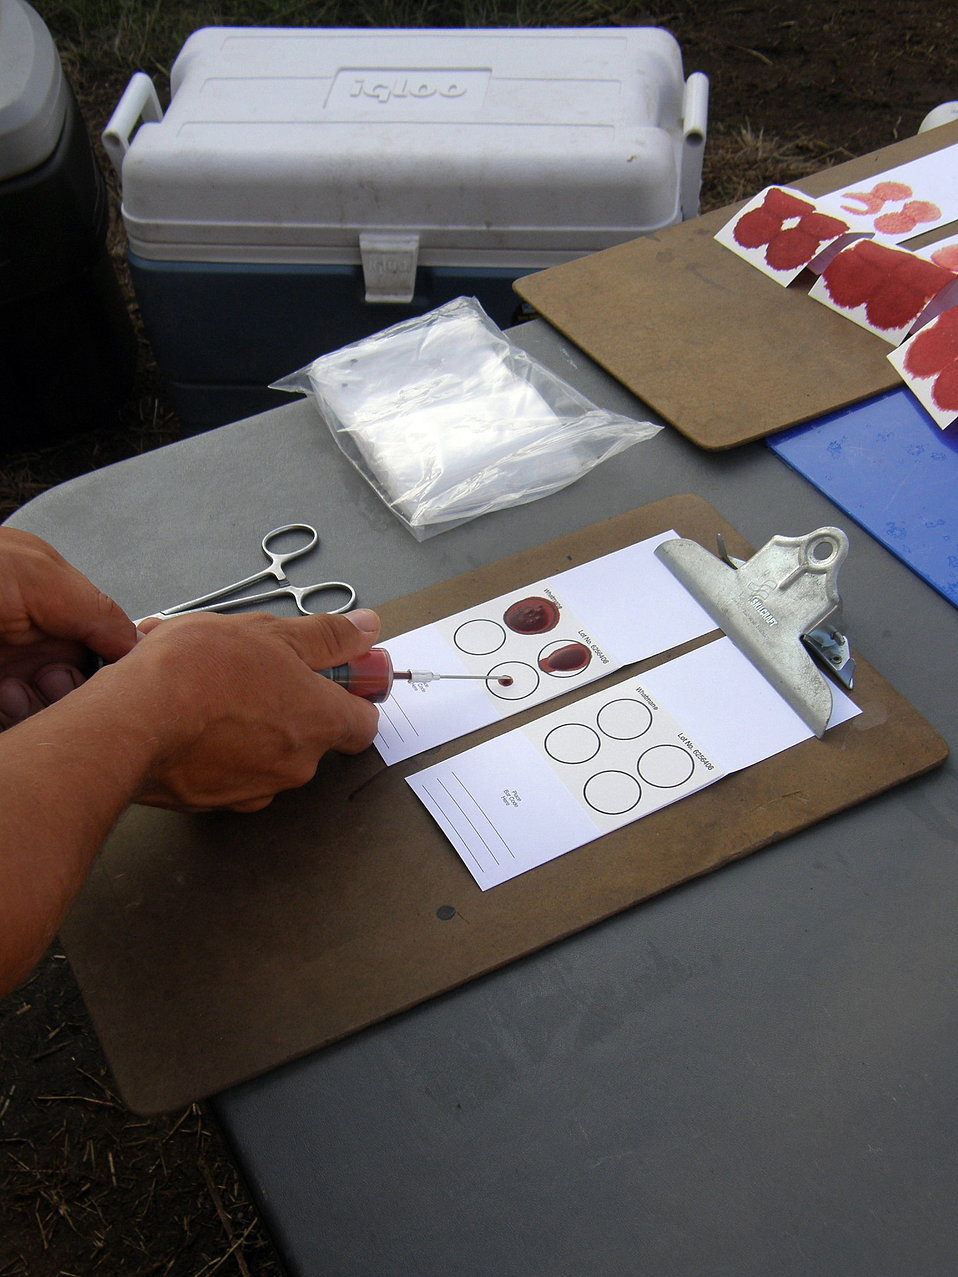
Bison Genetic Conservation

Refuge staff blot bison blood on a card for genetic analysis. The Wildlife Health Office oversees bison genetic conservation and metapopulation management for USFWS, and maintains an archive of genetic samples.